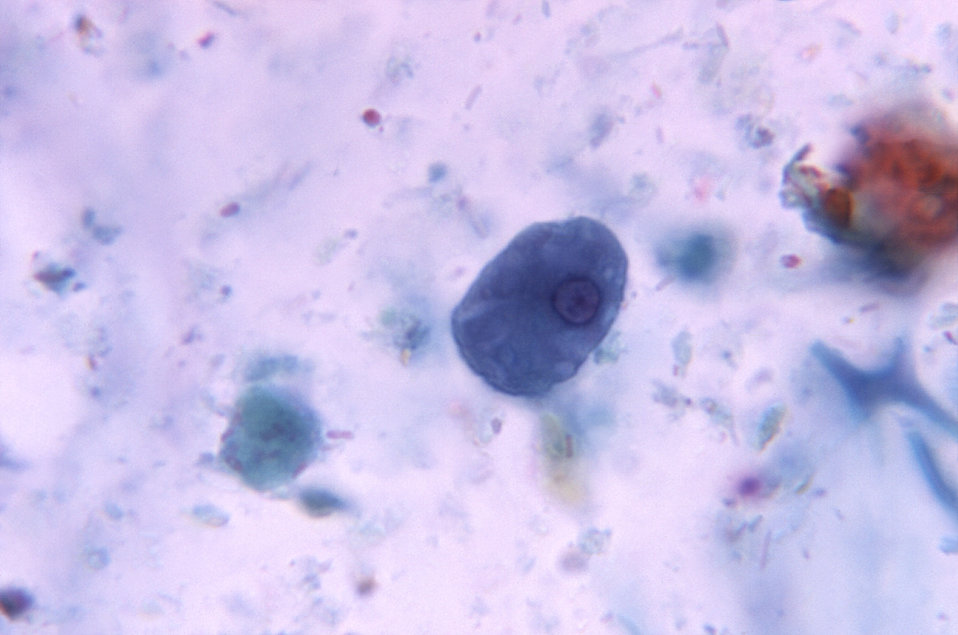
Magnified 1125X, this photomicrograph revealed the presence of a parasitic Entamoeba coli trophozoite, inside of which was a central karyosome. The trophozoites of E. coli measure usually 20�m - 25�m, but they can be elongated and reach up to 50�m. The trophozoites each have one nucleus with a characteristically large, eccentric karyosome and coarse, irregular peripheral chromatin. The cytoplasm is coarse and vacuolated ("dirty" cytoplasm).